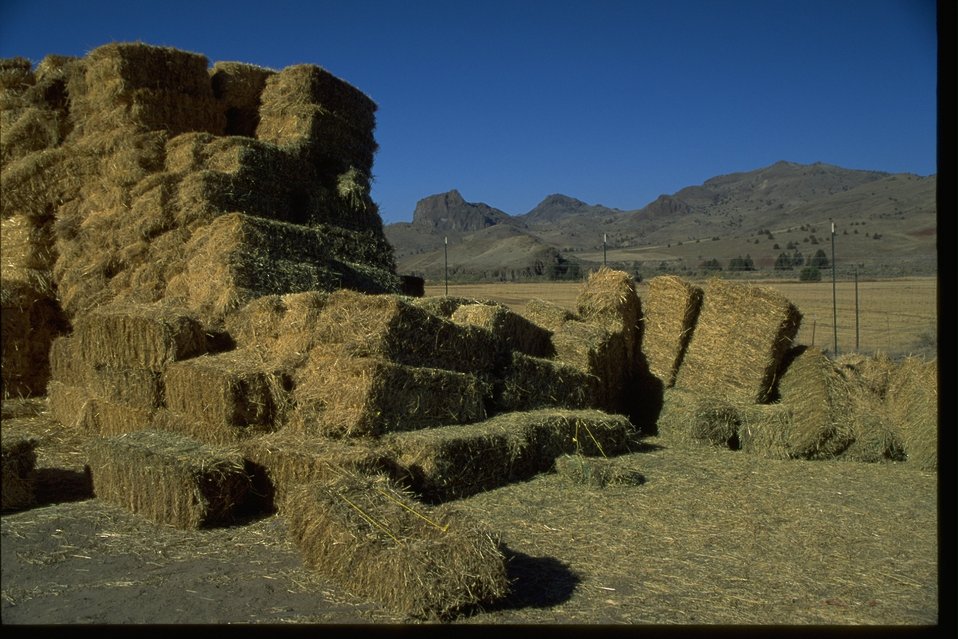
Bailed hay or straw in the Bridge Creek agricultural fields.